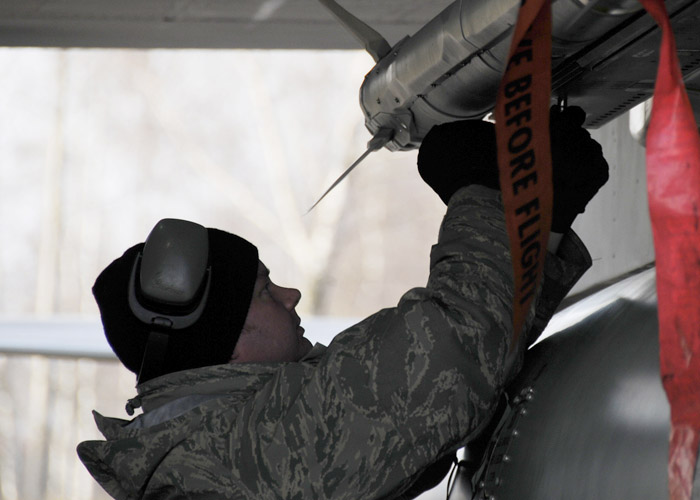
Readiness paramount in Baltic air policing mission

Staff Sgt. Kristopher Glenn inspects the missiles on an F-15 Eagle after landing Nov. 11 at Siauliai, Lithuania. Sergeant Glenn ensures the weapons are secured to the aircraft and makes any necessary adjustments due to movement in flight. He is a 493rd Expeditionary Fighter Squadron weapons loader.